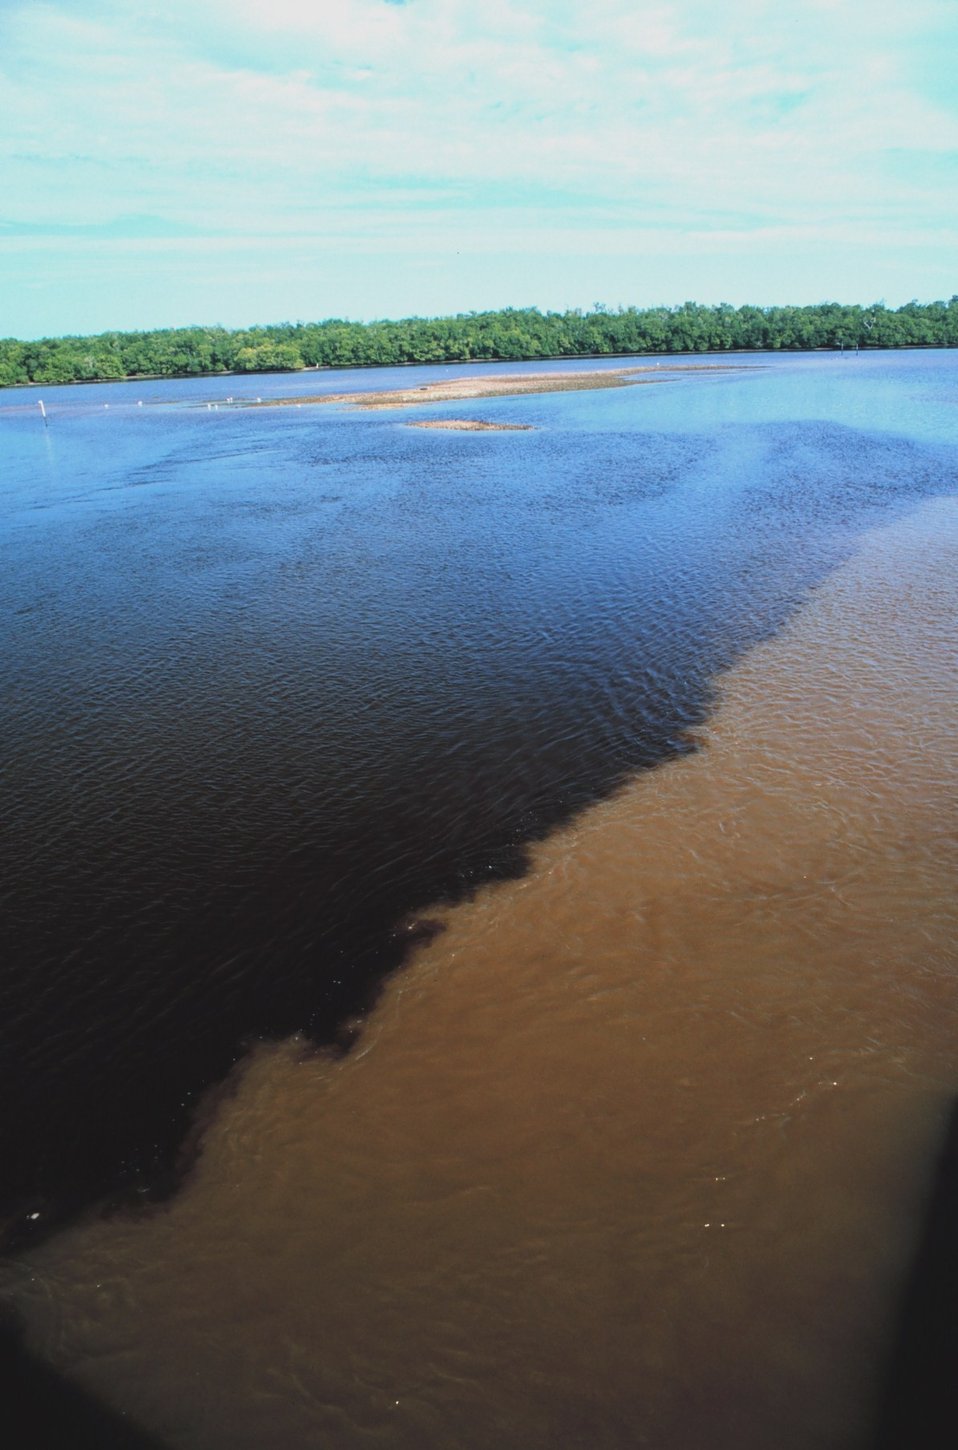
The ebb tide carrying clear and muddy waters into the Gulf of Mexico